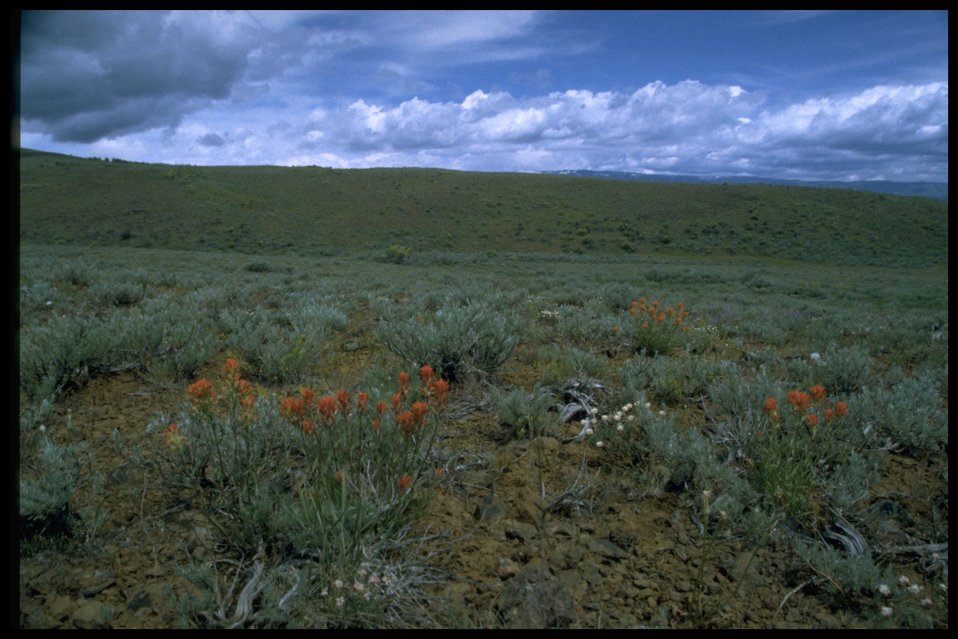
Farshot of Indian Paintbrush wildflowers and sagebrush habitat.